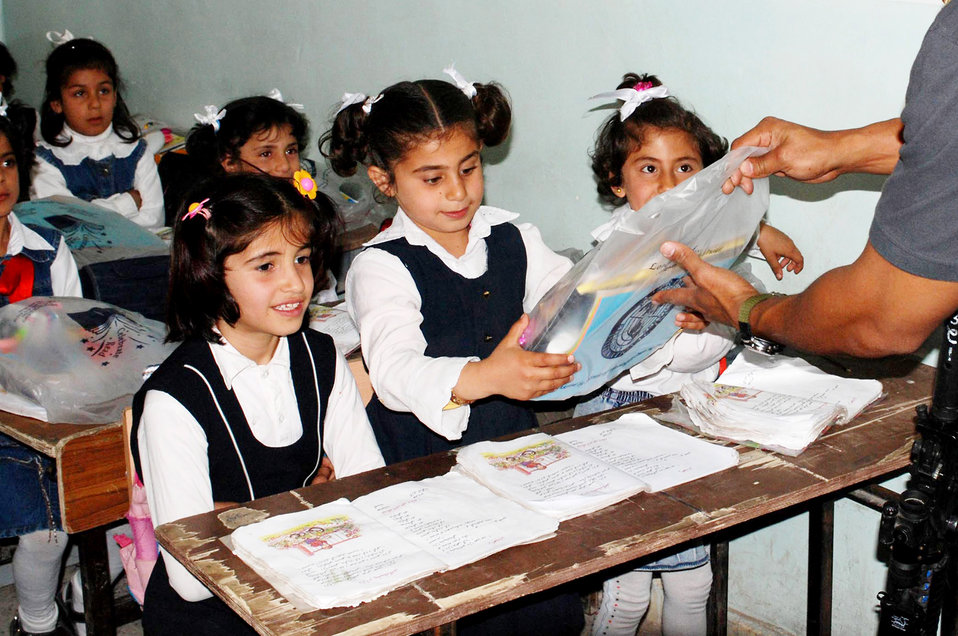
Making Iraq's future brighter: Operation School Supplies

An agent from the Air Force Office of Special Investigations Expeditionary Detachment 2410 at Kirkuk Air Base, Iraq, hands out bags of school supplies to children at a nearby school April 18. This effort is part of Operation Iraqi School Supplies, and is sponsored by the 506th Air Expeditionary Group. School supplies are sent from people all over the United States.